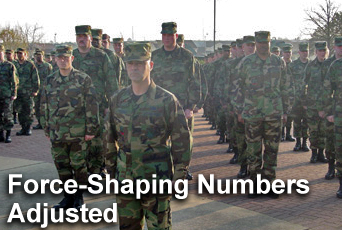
Force-Shaping Numbers Adjusted

The Air Force has adjusted its force-shaping numbers and will use three personnel programs to help meet the goal.